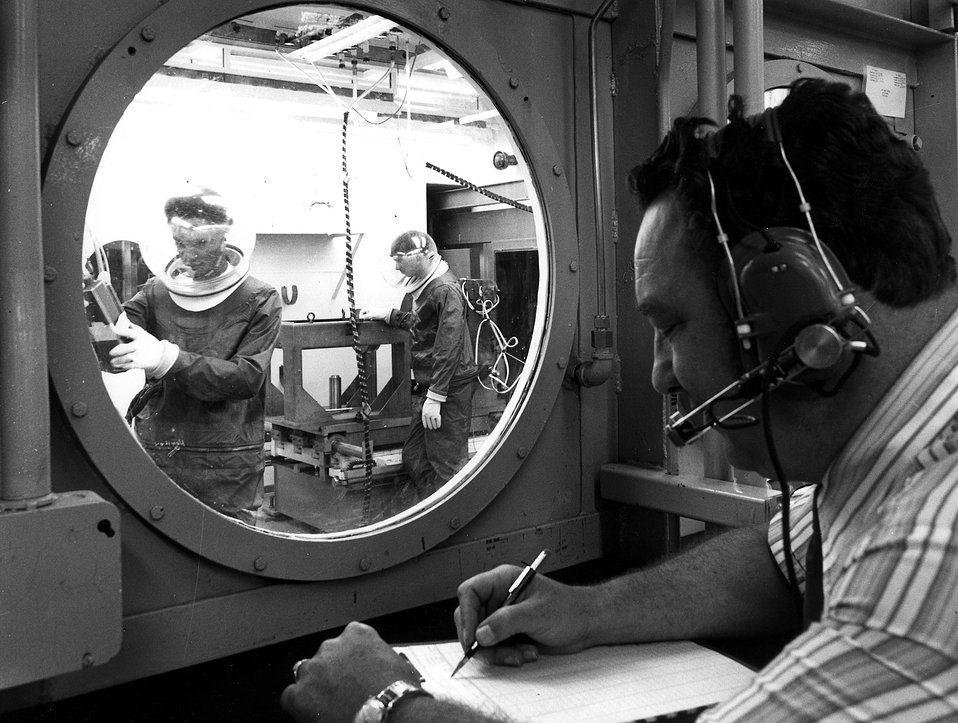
An assembly foreman (foreground) at Oak Ridge Y-12 Plant communicates with assemblymen working in an ultra dry room. Air-tight and moisture-tight suits prevent body moisture from damaging materials. The Y-12 Plant is operated for the AEC by Union Carbide Corp.'s nuclear division. Circa 1974.